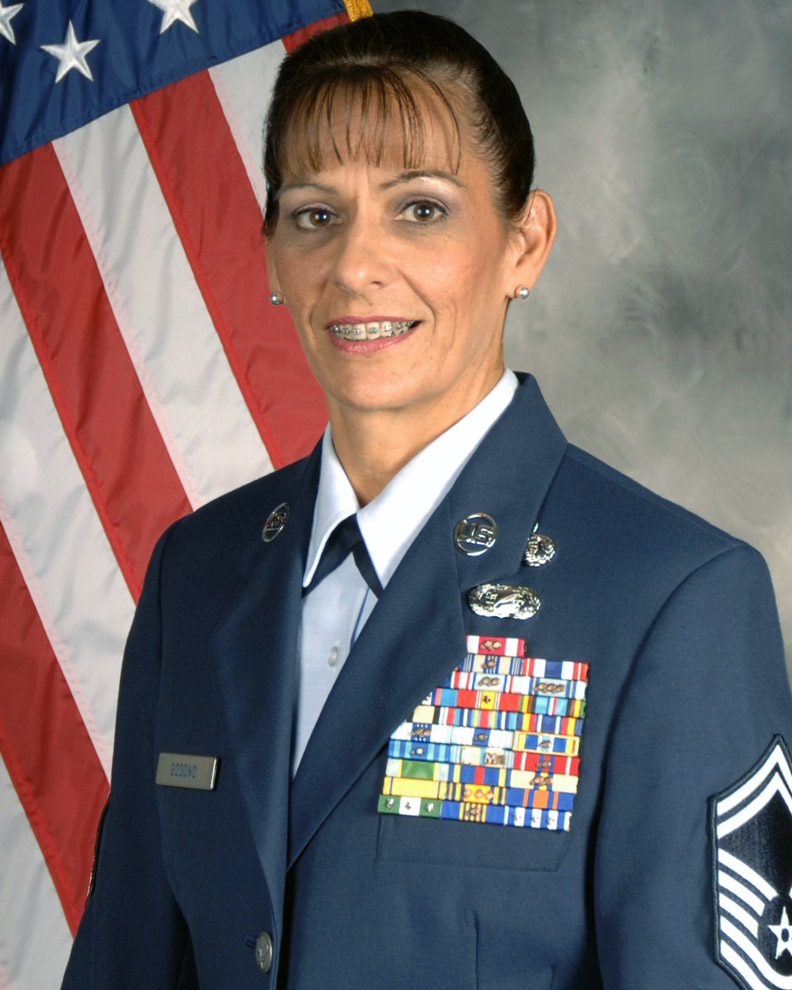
Air Force officials honor 12 Outstanding Airmen of the Year

Senior Master Sgt. Donna Goodno from San Diego Air National Guard Station is one of the 12 Outstanding Airmen for 2008.